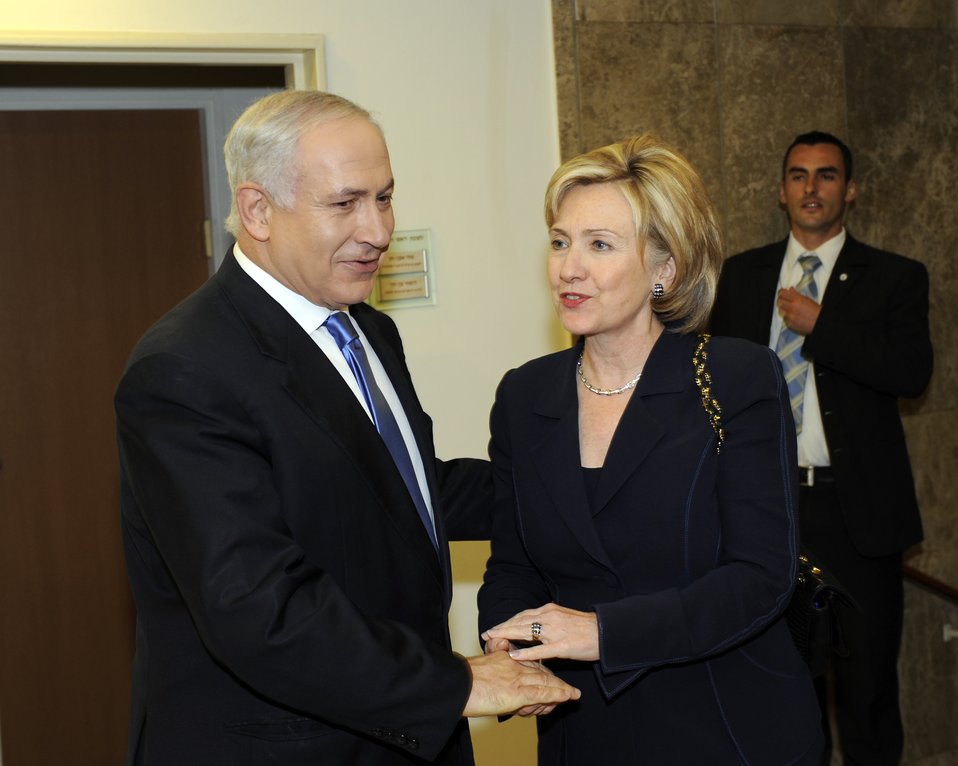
Secretary Clinton Meets With Israeli Prime Minister

U.S. Secretary of State Hillary Rodham Clinton meets with Israeli Prime Minister Benjamin Netanyahu in Jerusalem, October 31, 2009.